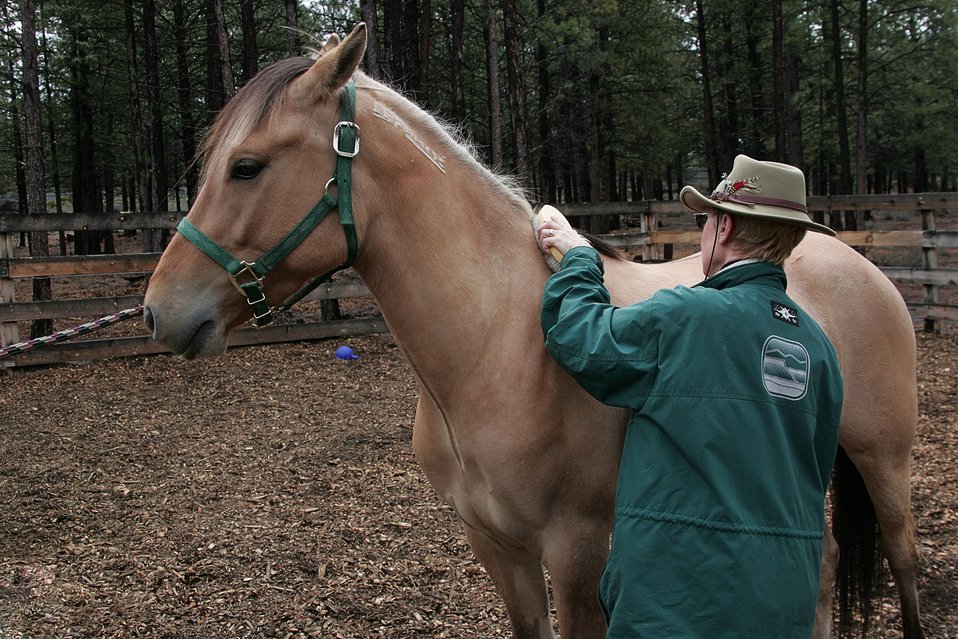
At High Desert Museum volunteer grooms Spirit, a Kiger wild horse, in preparation for action.